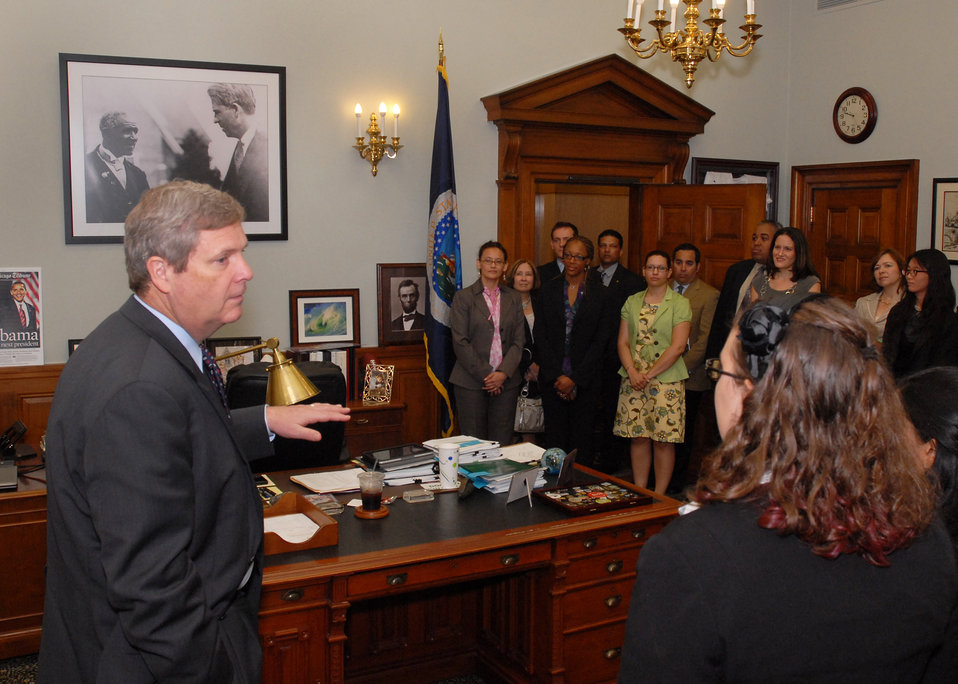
Agriculture Secretary Tom Vilsack speaks with Wallace-Carver interns at the U.S. Department of Agriculture in Washington, DC, on Monday, June 20, 2011.